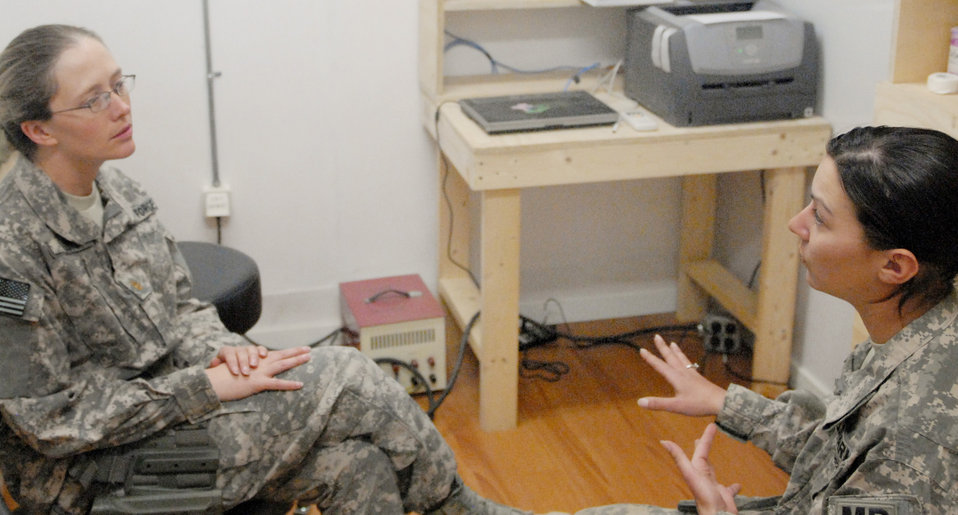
Combat stress team strives to connect

Maj. Kim Floyd speaks with Army Spc. Autumn L. Gregg April 1, 2010, at Forward Operating Base Lightning in Afghanistan's Paktia province. Major Floyd is a psychologist assigned to the Combat Stress Control Det. 1. She is deployed from the 92nd Medical Group at Fairchild Air Force Base, Wash.